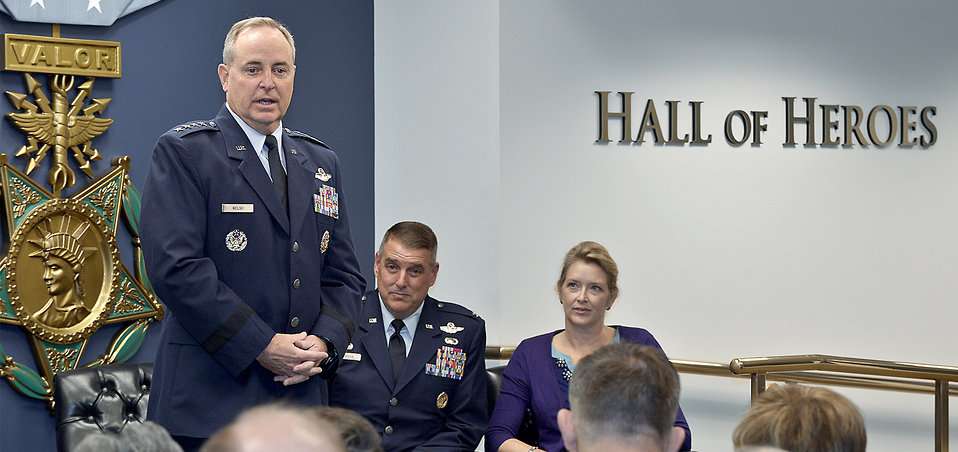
2012 General Jerome F. O’Malley and Diane O’Malley Award

Air Force Chief of Staff Gen. Mark A. Welsh III delivers remarks for the presentation of the 2012 General Jerome F. O'Malley and Diane O'Malley Award during a ceremony at the Pentagon, Oct. 24, 2012. Col. Michael Minihan and his wife, Ashley, earned the award for their time in command at Little Rock Air Force Base, Ark. The annual award recognizes the wing commander and spouse team whose contributions to the nation, Air Force, and local community best exemplify the highest ideals and positive leadership of a military couple in a key Air Force position.